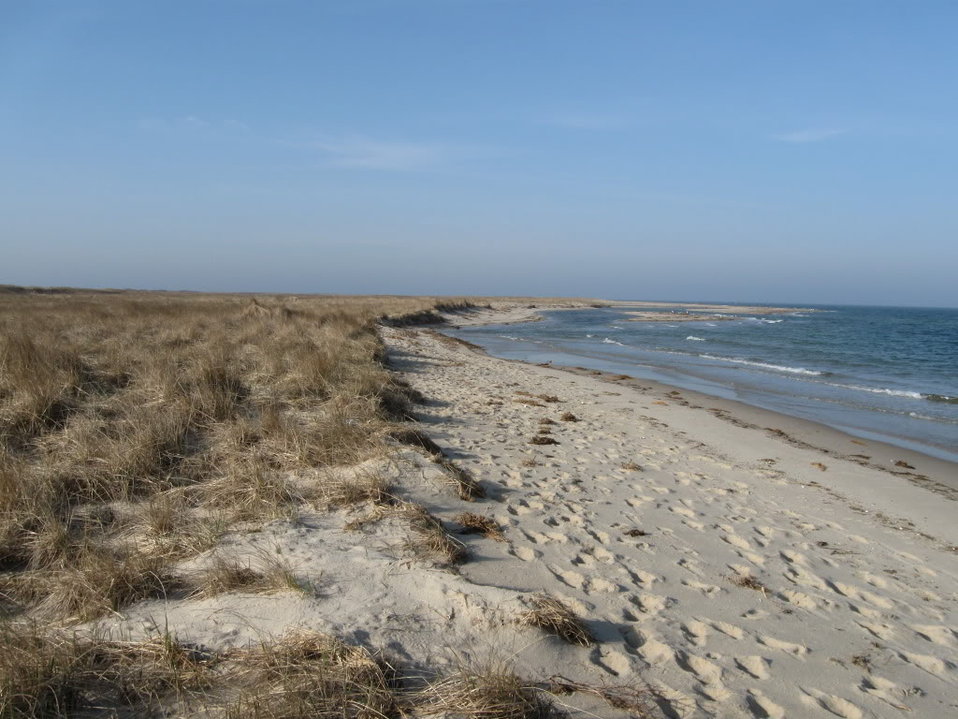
Monomoy National Wildlife Refuge shore

Monomoy National Wildlife Refuge.

Credit: Zachary Cava/USFWS

Monomoy National Wildlife Refuge is part of the Eastern Massachusetts National Wildlife Refuge Complex.